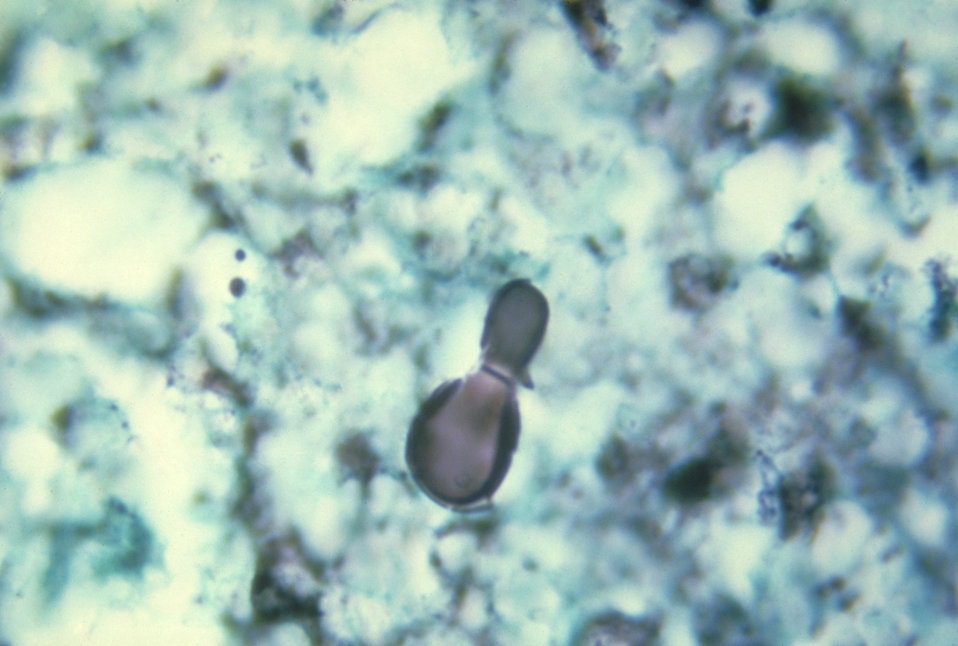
Histopathology of blastomycosis. Yeast cell of Blastomyces dermatitidis undergoing broad-base budding.